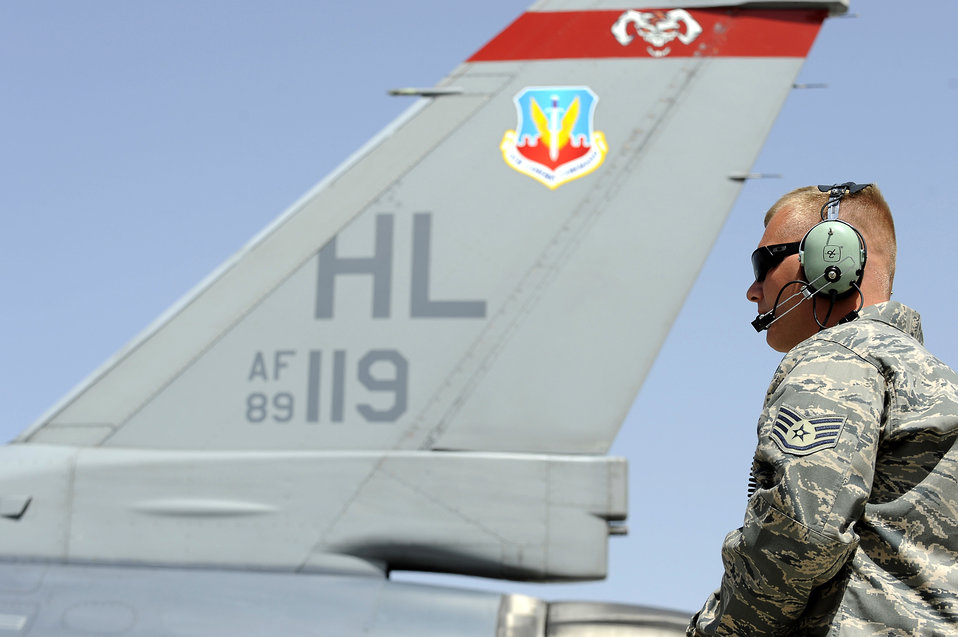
30 Code 1 flights

Staff Sgt. Lucas Inboden, a crew chief from the 34th Expeditionary Fighter Squadron at Bagram Airfield, Afghanistan, recovers this F-16 Fighting Falcon March 23, 2010, after it completed its 30th code 1 flight, meaning no maintenance write-ups for 30 flights in a row. Sergeant Inboden is deployed from Hill Air Force Base, Utah.